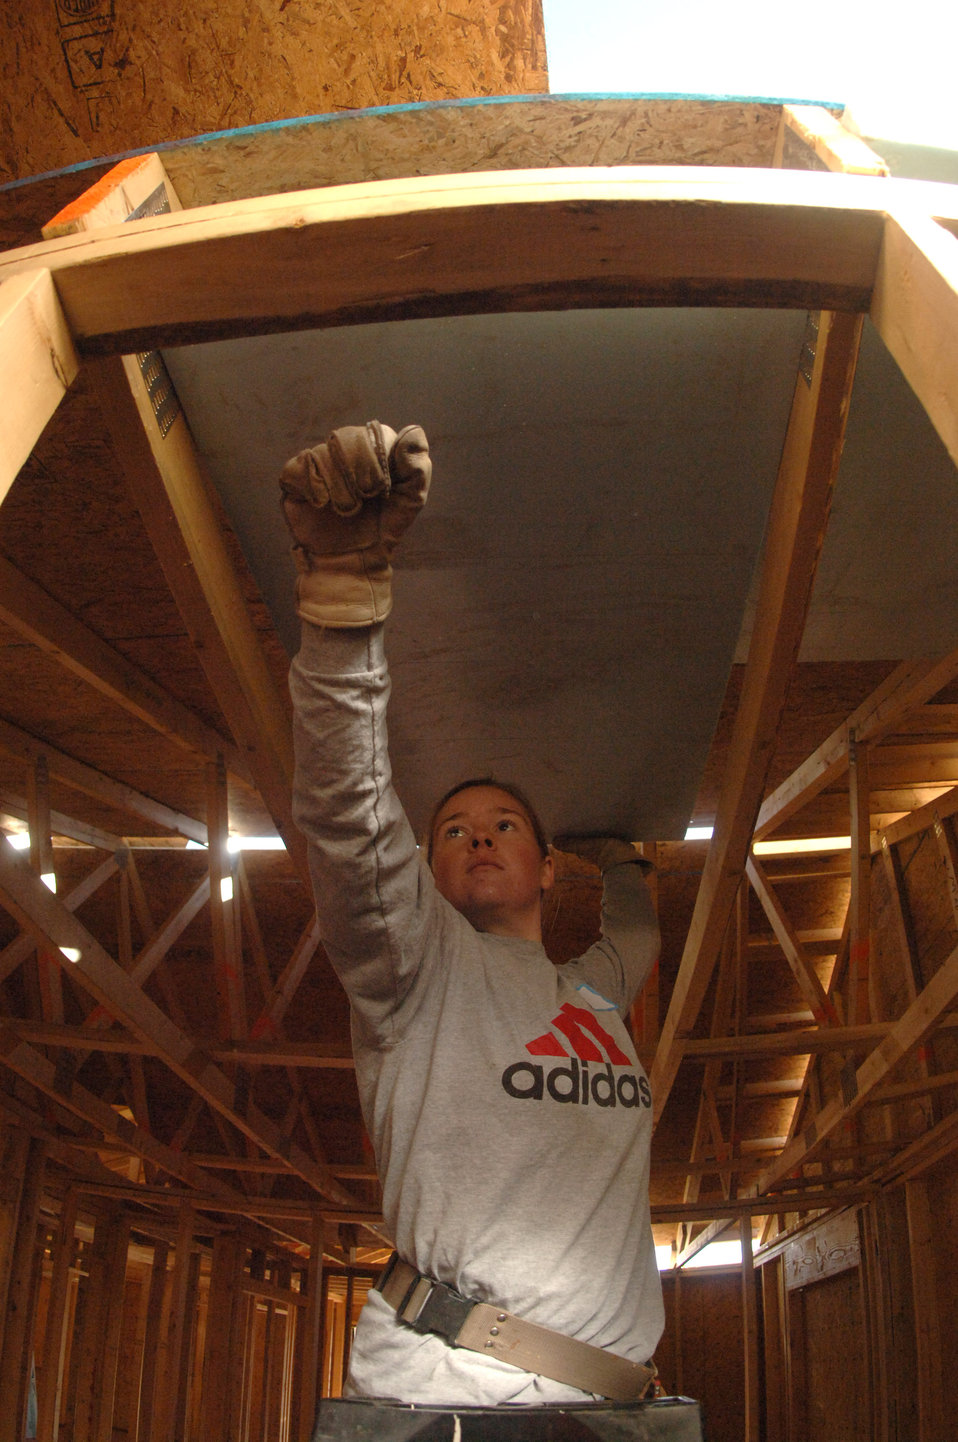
Cadets give up spring break to build homes

Cadet 4th Class Michelle Paranteau persuades a tight-fitting piece of insulation in place with her fist, while helping build a home during her spring break, via Habitat for Humanity. Cadet Paranteau is one of 65 Air Force Academy cadets giving up their spring break this week, to build homes for the needy in Santa Fe, N.M.; Cody, Wyoming; El Paso, Texas; and Beaumont, Texas.